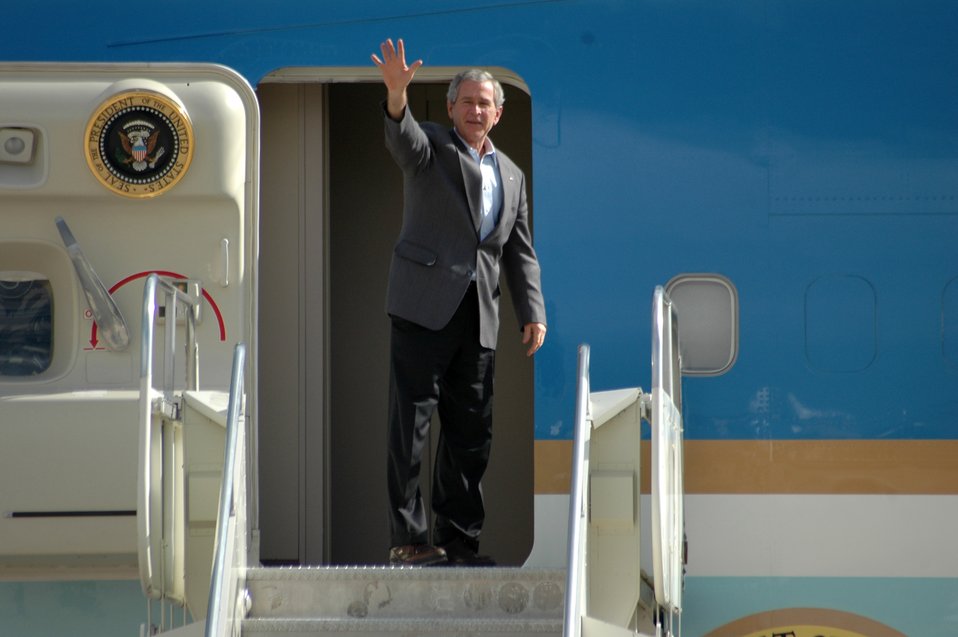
President Bush visits Buckley Air Force Base

President George W. Bush waves as he boards Air Force One at Buckley Air Force Base, Colo., on Nov. 4 after a one-night visit to attend a political rally.